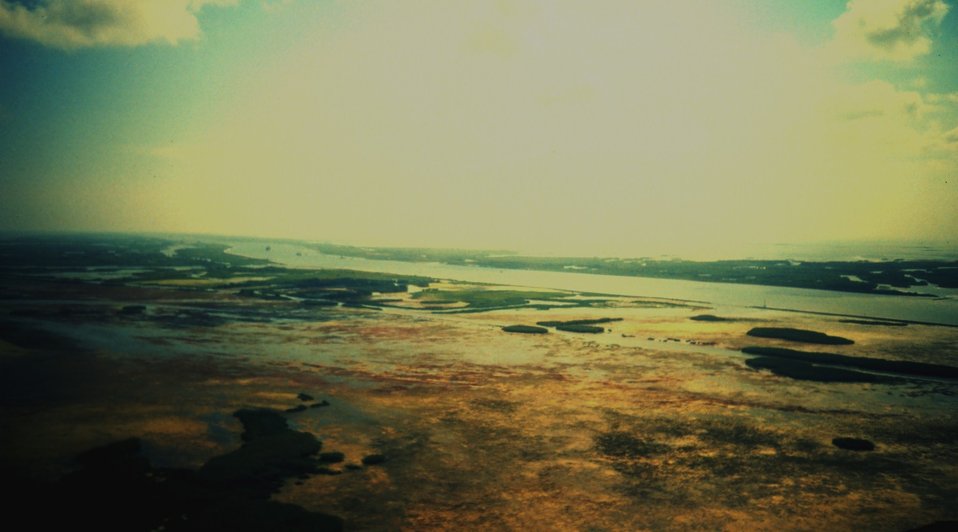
Aerial view of Mississippi Delta wetlands adjacent to Pass a Loutre